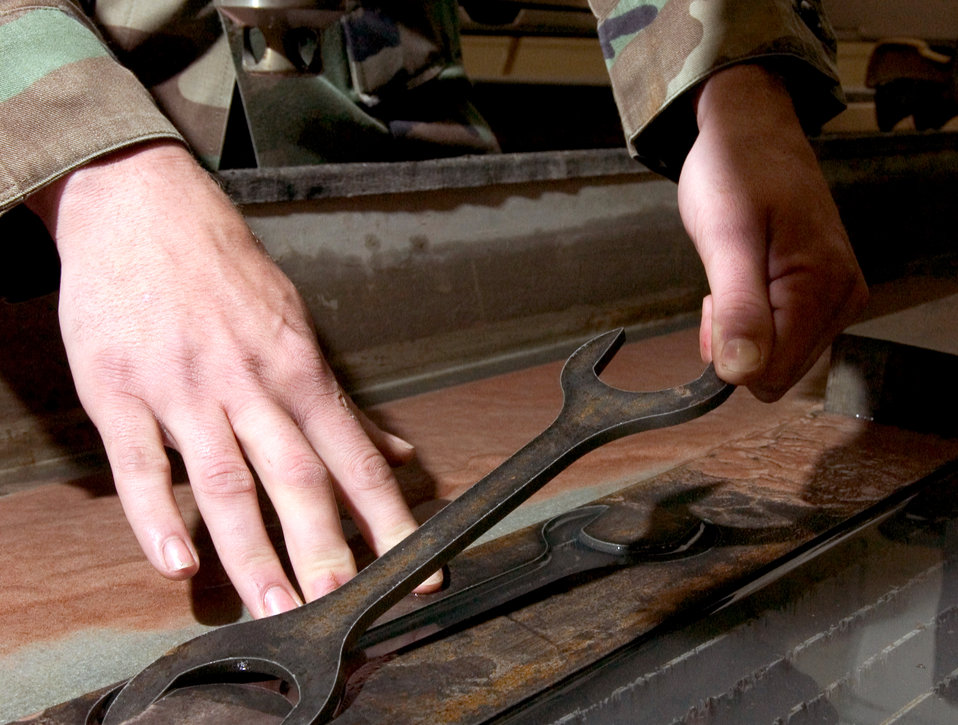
Technicians cut metal waste

A technician from the 3rd Equipment Maintenance Squadron metals technology shop finishes producing a special tool using an abrasive water-jet cutter on Friday, June 16.